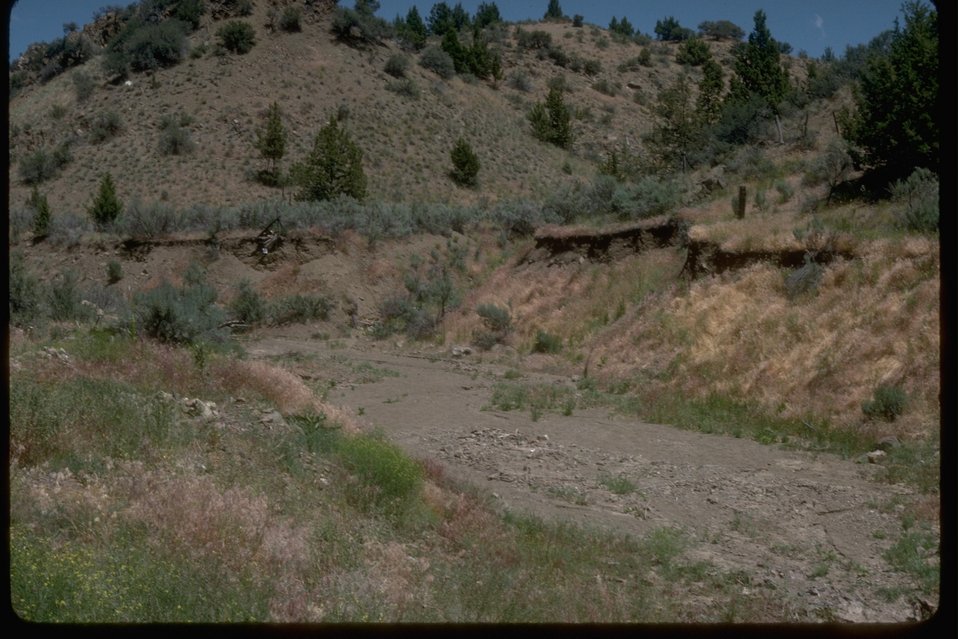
Gully outwashing.